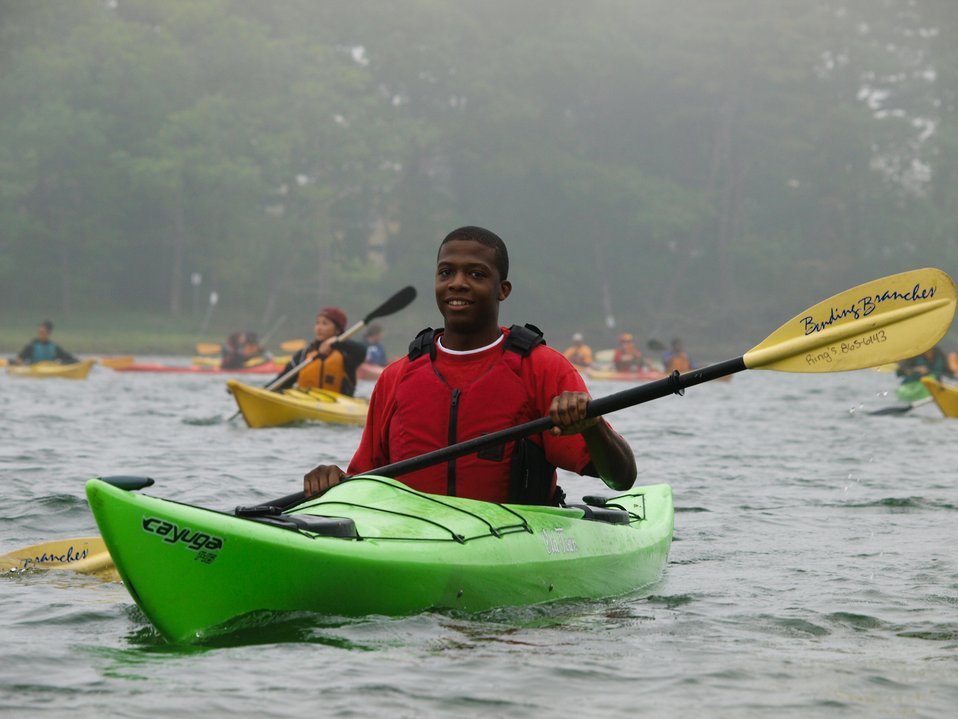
Tajaun Levy - 2010 Annual CIP Kayaking trip

CIP Intern Tajaun Levy on the program’s annual coastal kayaking trip.